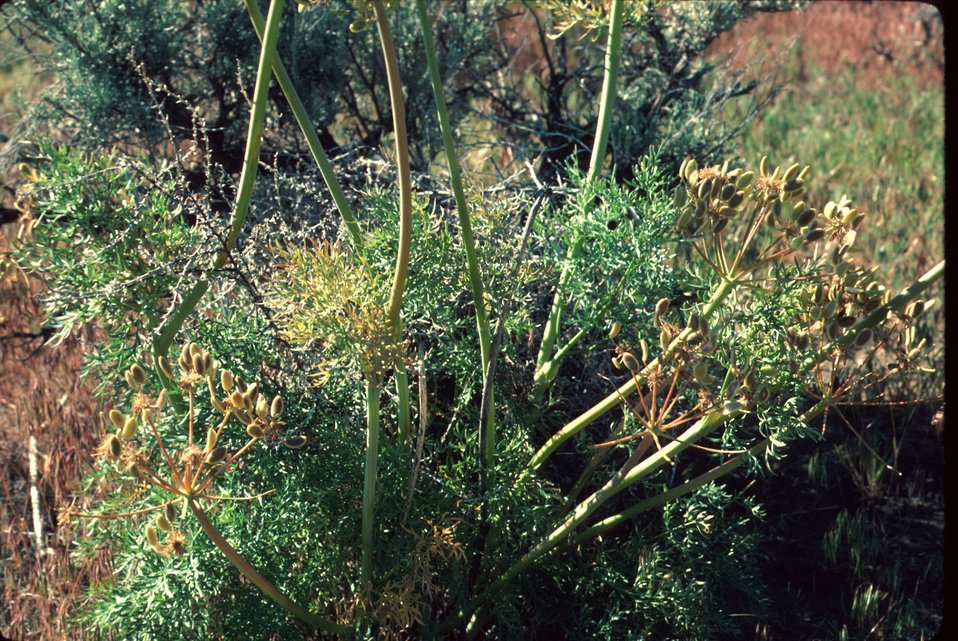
Lomatium dissectum desert parsely Wildflower